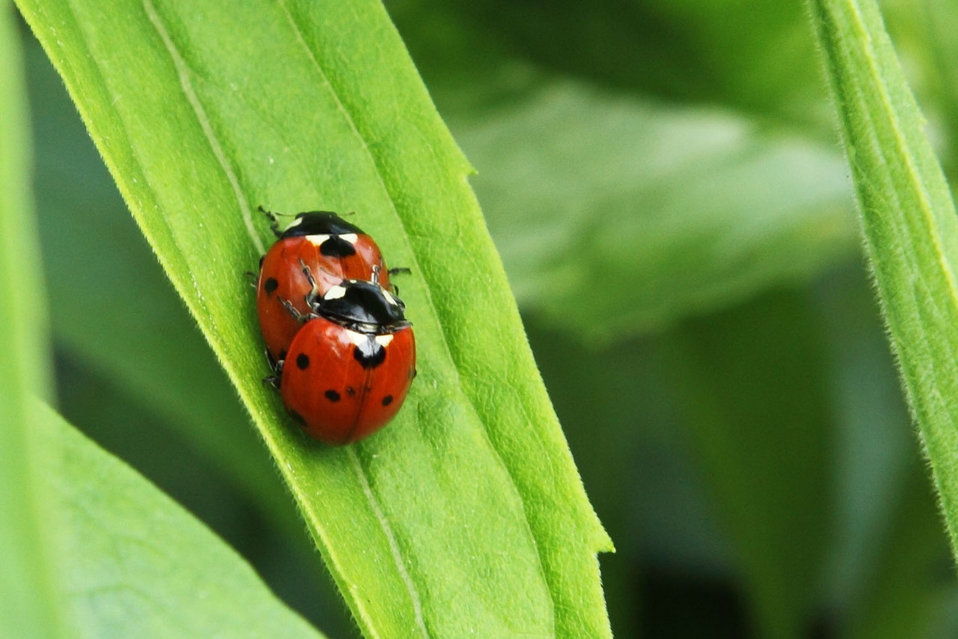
Ladybird mating

Male and female ladybird mating.